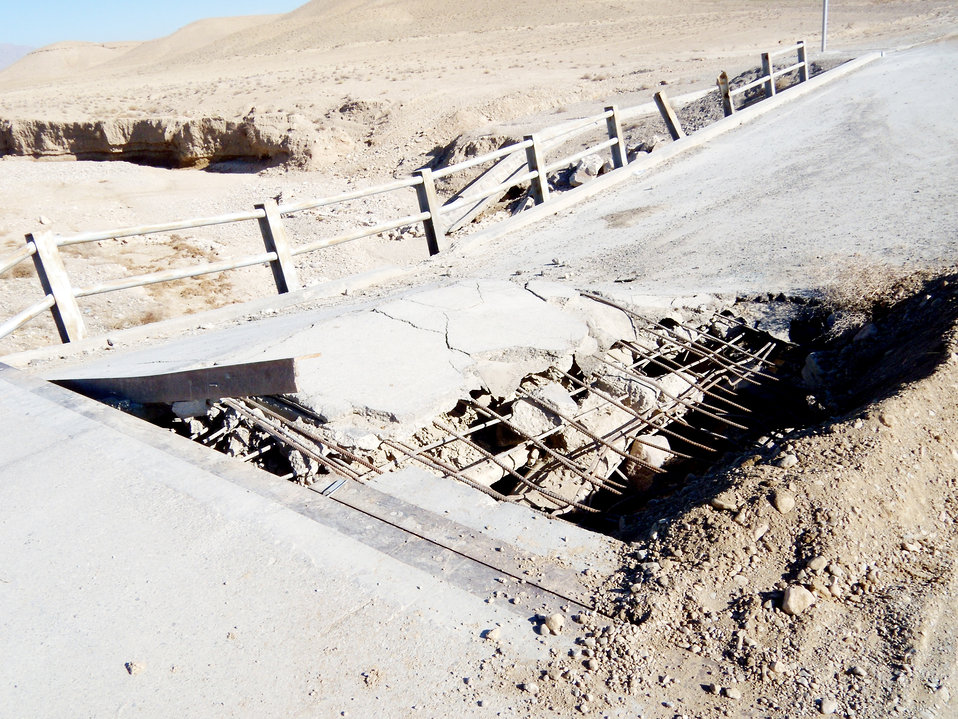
Servicemembers help Afghans

The Provincial Reconstruction Team Zabul team repaired roads and bridges such as these hit by improvised explosive devices in the Zabul Province.